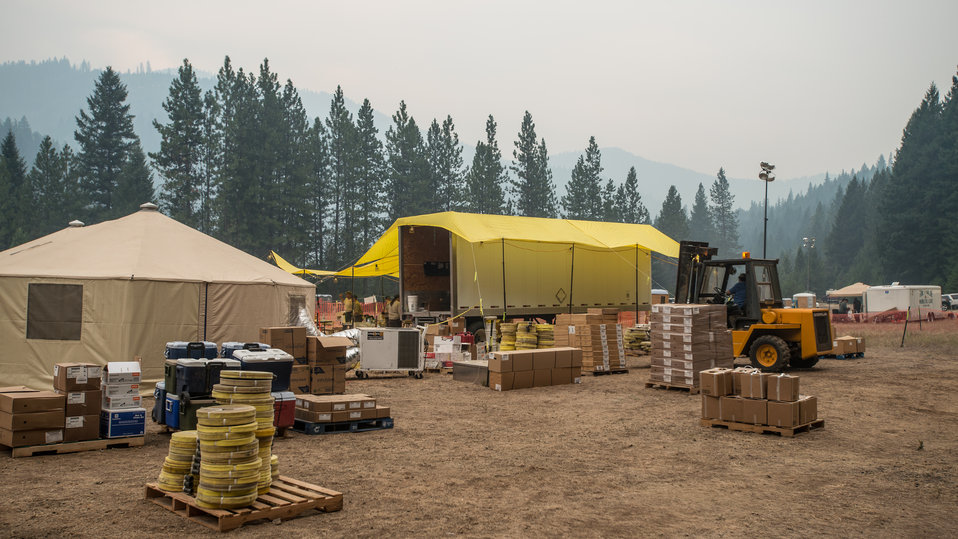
The Supply Cache is a major logistics factor in fighting the Salmon River Complex Fire burning northwest of Sawyers Bar and west of Etna and Yreka, CA in the Klamath National Forest, on Tuesday, Aug. 6, 2013. It is vital that when a firefighter needs fire resistant clothing, a Mccloud Tool, Pulaski Axe, Combi Tool, pumps, connectors and hoses to draw water from a portable reservoirs to pressurize hand line (fire hoses), they go to this centralized point to get readily available item for issue or replacement as needed. These supplies have been shipped from the National Interagency Supply Cache System depots and/or other caches to this and other fires across the nation.